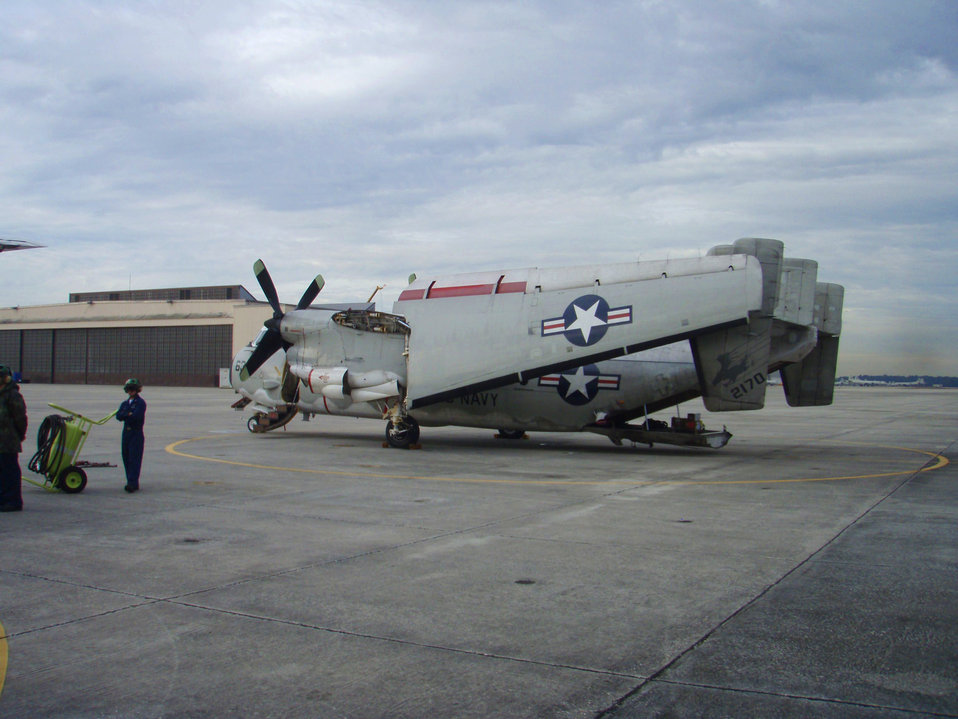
Photographed by U.S. Public Health Service (USPHS) Lt. Cmdr. Gary Brunette, this image depicted the aircraft that was used to transport Cmdr. Brunette, and his fellow PHS crewmembers from the Jacksonville, Florida Naval Base to the Nimitz class supercarrier, USS Carl Vinson (CVN-70), from which the PHS corpsmen would be transported to the aircraft carrier, USS Bataan, in response to the 2010 earthquake, which devastated Haiti.